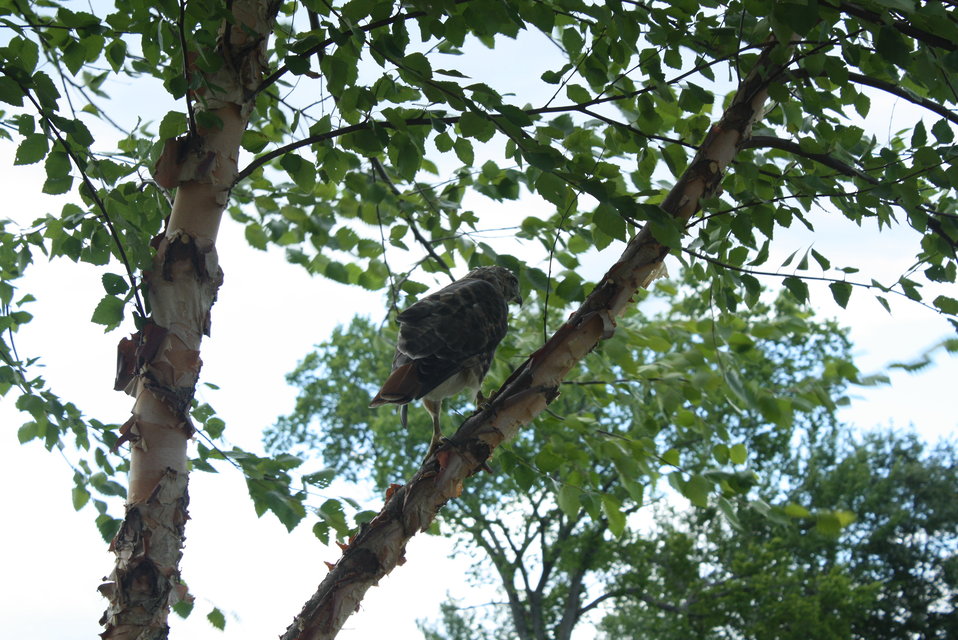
Red-tailed Hawk in tree

Hawk outside of the U.S. Fish and Wildlife Service Northeast Regional Office, August 14 2013, allowed for some close ups to be taken while it looked for prey.